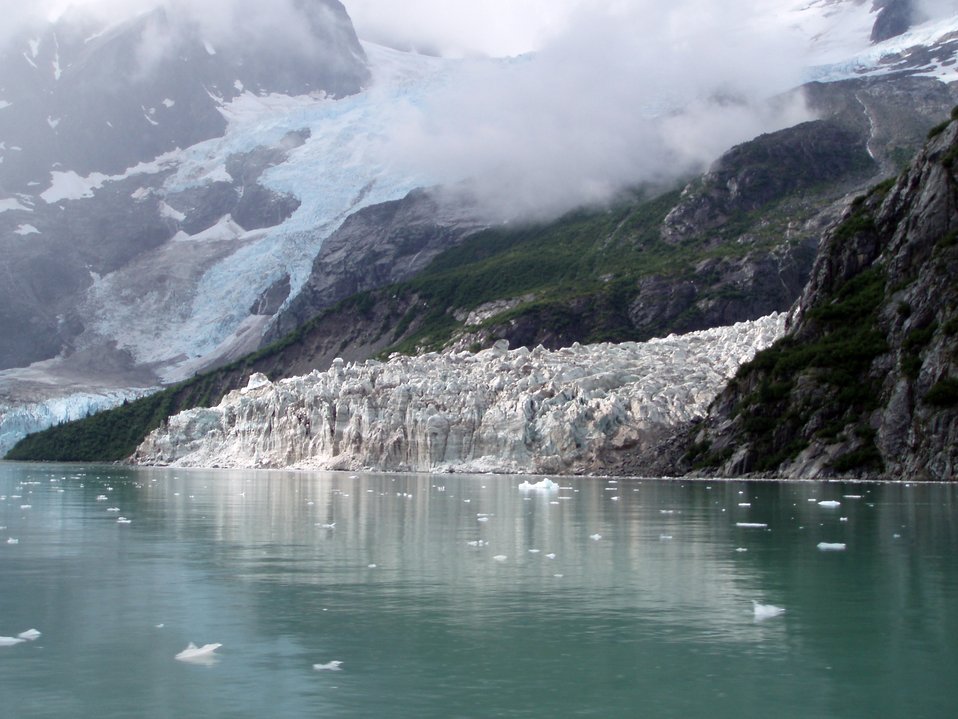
Anchor Glacier